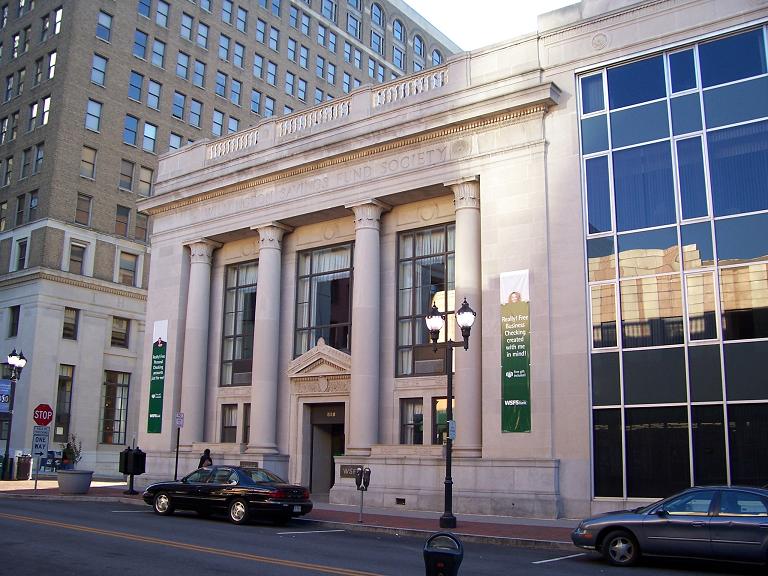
WSFS Bank branch at 838 N. Market Street, Wilmington, DE. This is an image of a place or building that is listed on the National Register of Historic Places in the United States of America. Its reference number is 85000158.